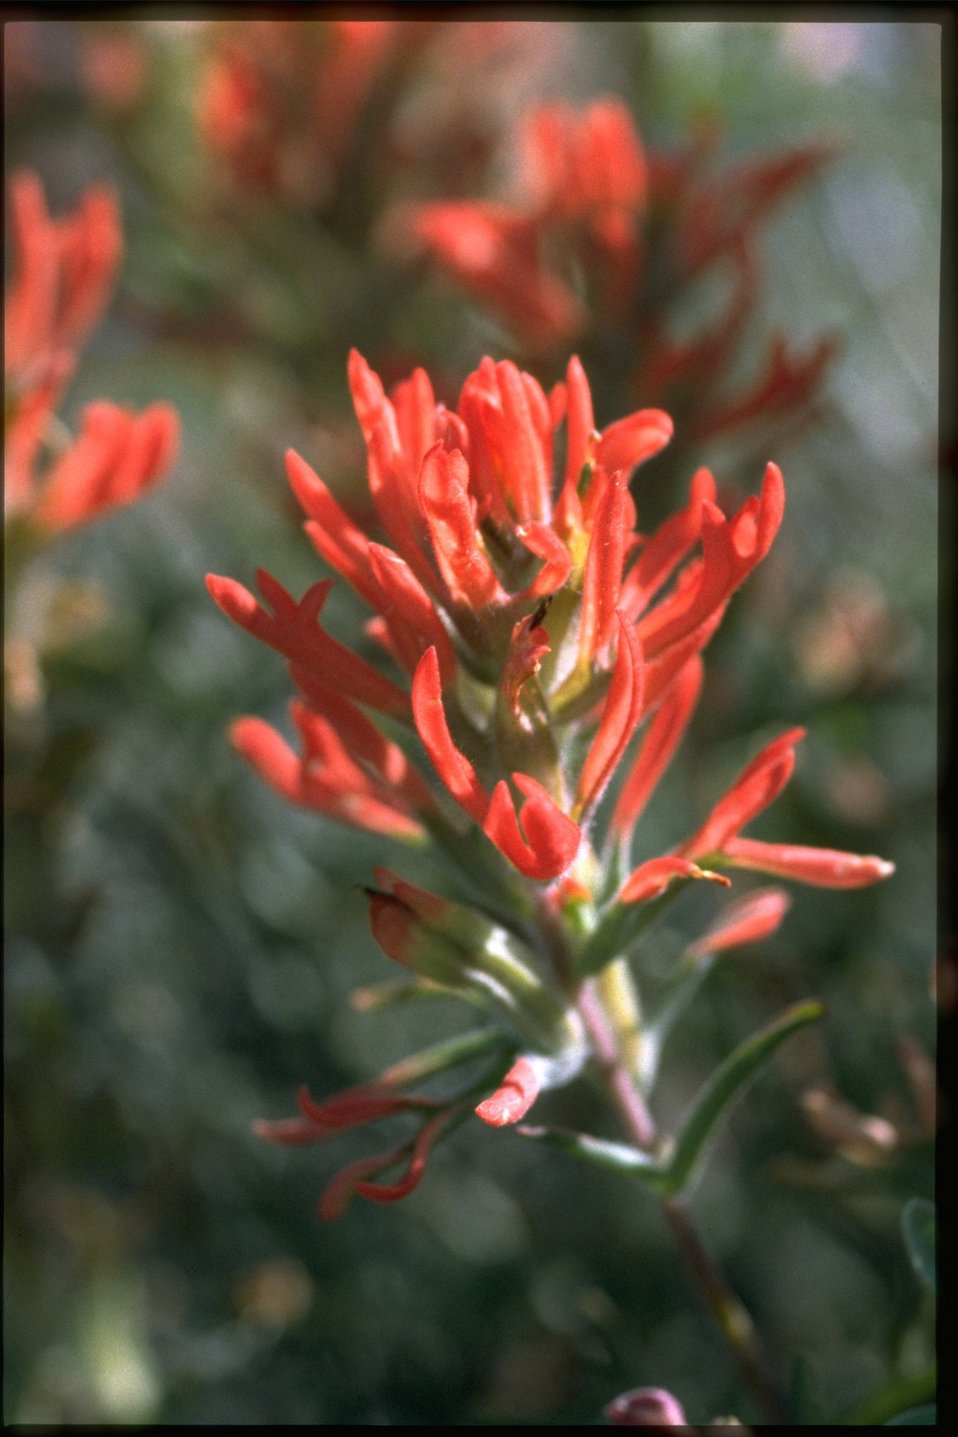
Medium shot of Castilleja.